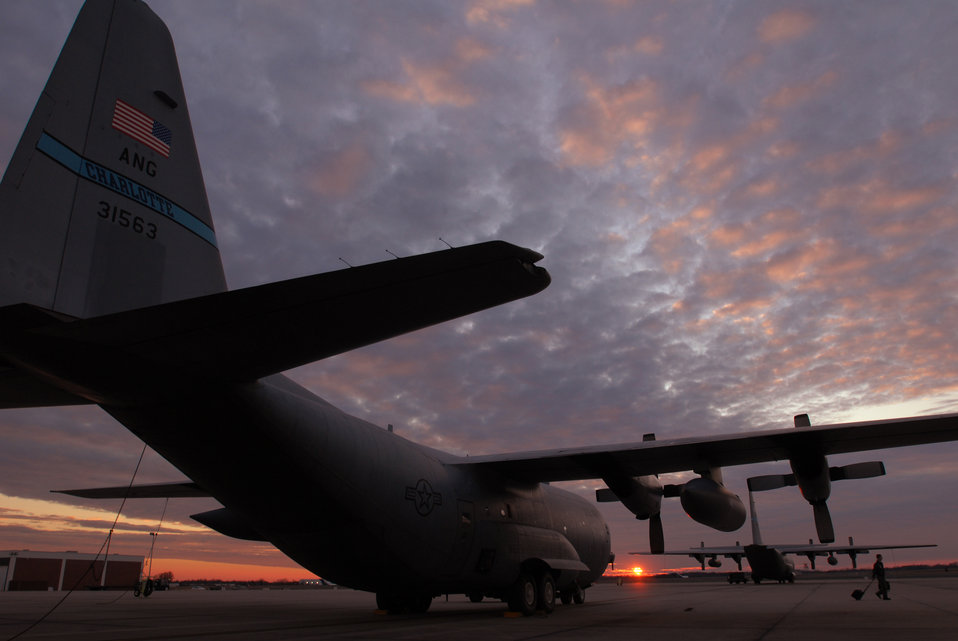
Defending freedom

C-130 Hercules aircraft sit on the flight line Feb. 6 at sunset in Charlotte, N.C. The Air National Guard's 145th Airlift Wing aircraft and Airmen are preparing to deploy in support of Operation Enduring Freedom.